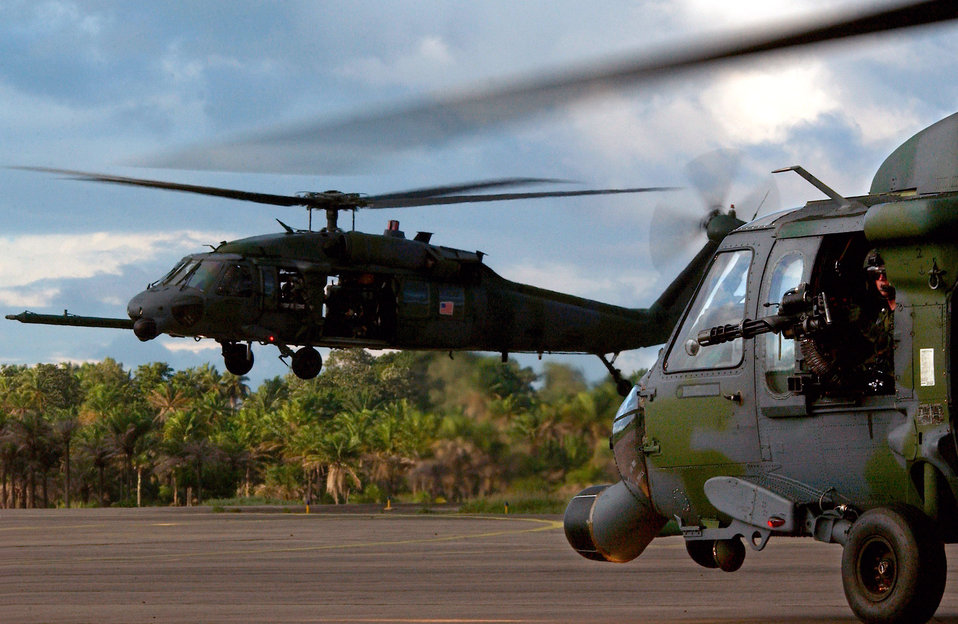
Flight function check

LUNGI, Sierra Leone -- An HH-60G Pave Hawk helicopter from the 56th Rescue Squadron hovers over the runway here July 18 as part of a functional check flight. Airmen of the 56th RQS are providing recovery and emergency evacuation capability for the humanitarian assistance survey team in Liberia.